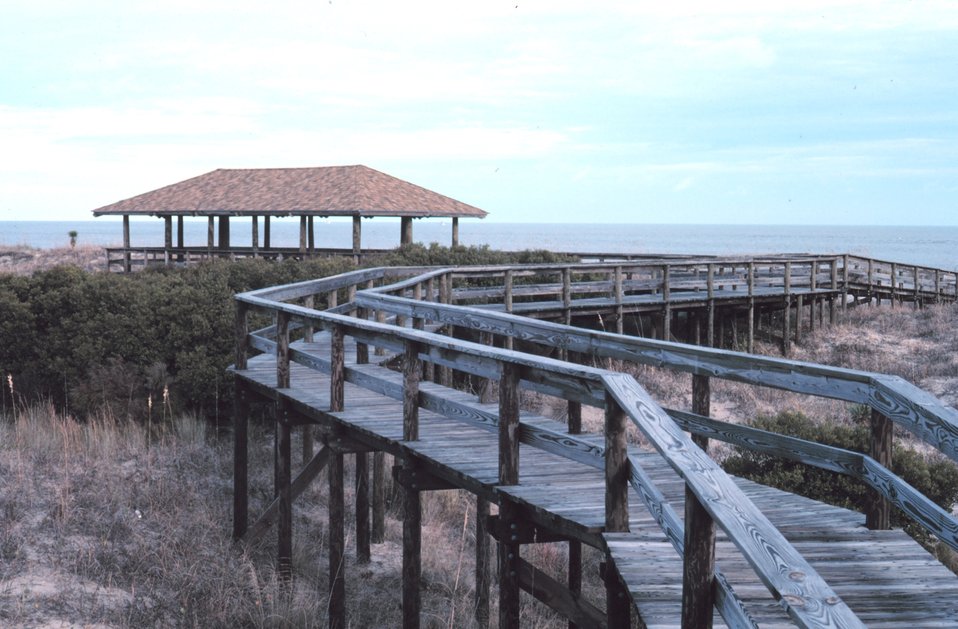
The Pavilion at Nannygoat Beach.